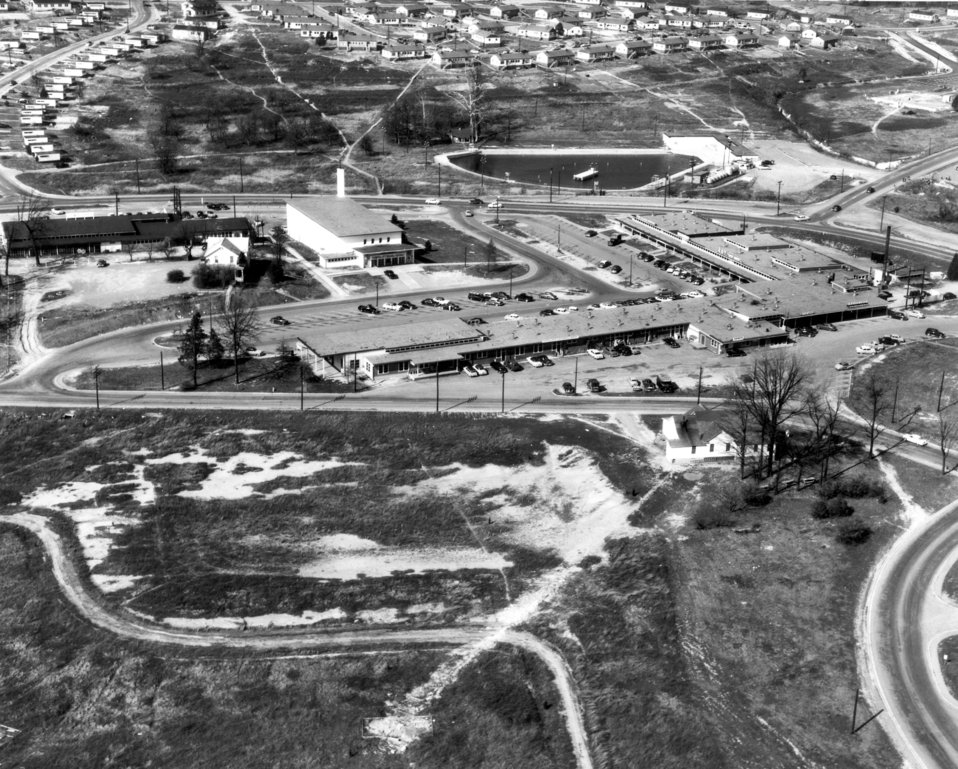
Air View Swimming Pool – Grove Center -1955

55-0204 DOE photo by Ed Westcott Oak Ridge Tennessee 1955